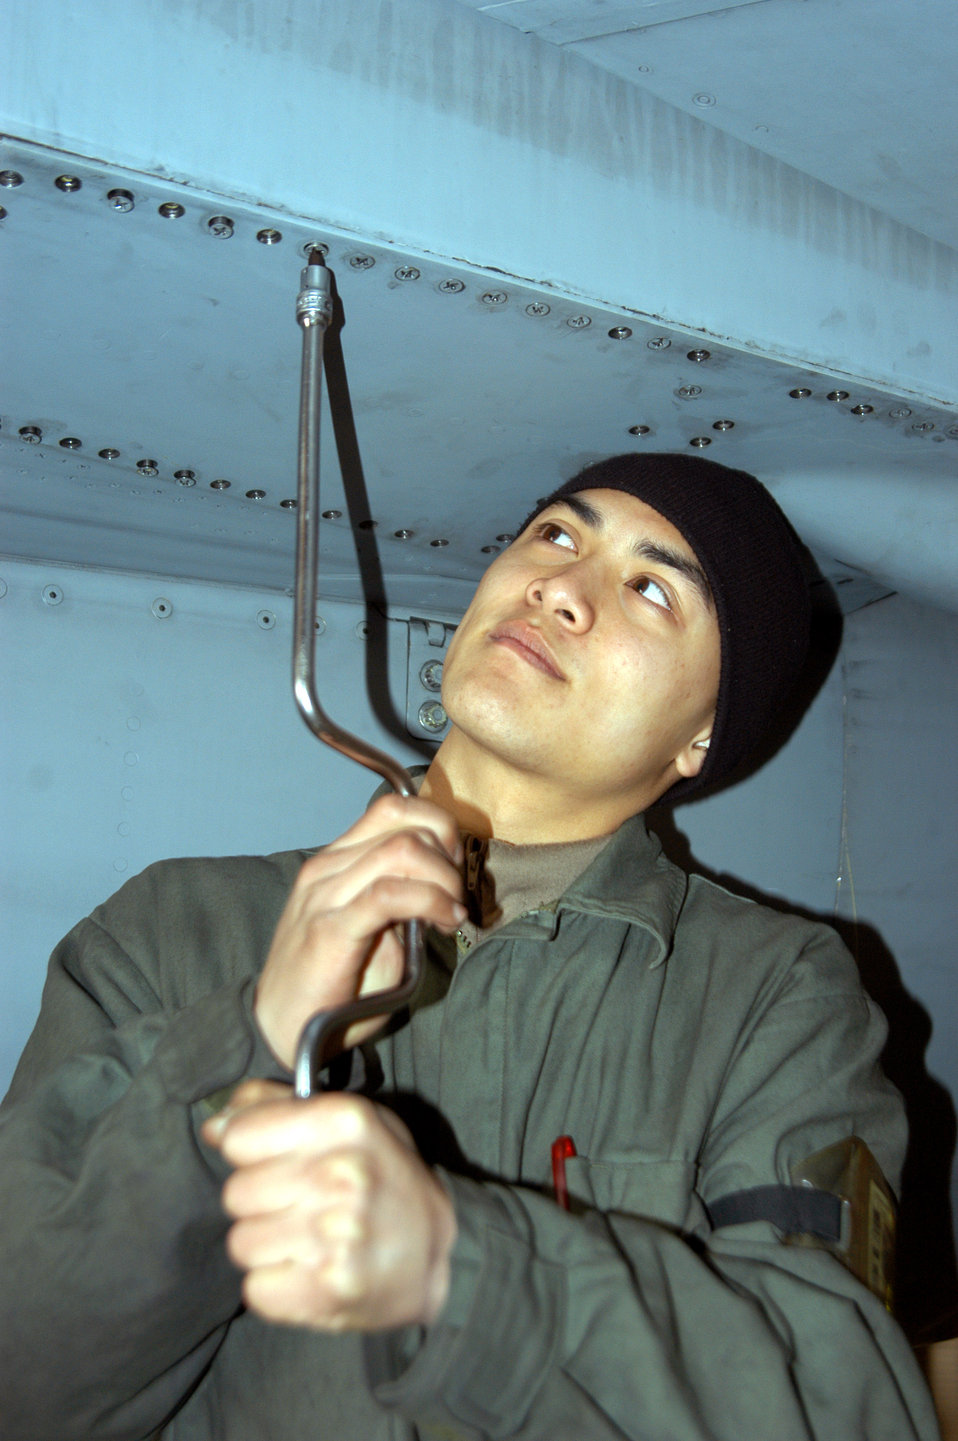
Operation Commando Sling

Airman 1st Class Robert Nguyen tightens down a rear panel on an F-16 Fighting Falcon at Kunsan Air Base, South Korea, Wednesday, March 1, 2006. Aircraft from the 80th Fighter Squadron deployed to Singapore March 2 for Operation Commando Sling. Airman Nguyen is a crewchief with the 80th Aircraft Maintenance Unit.